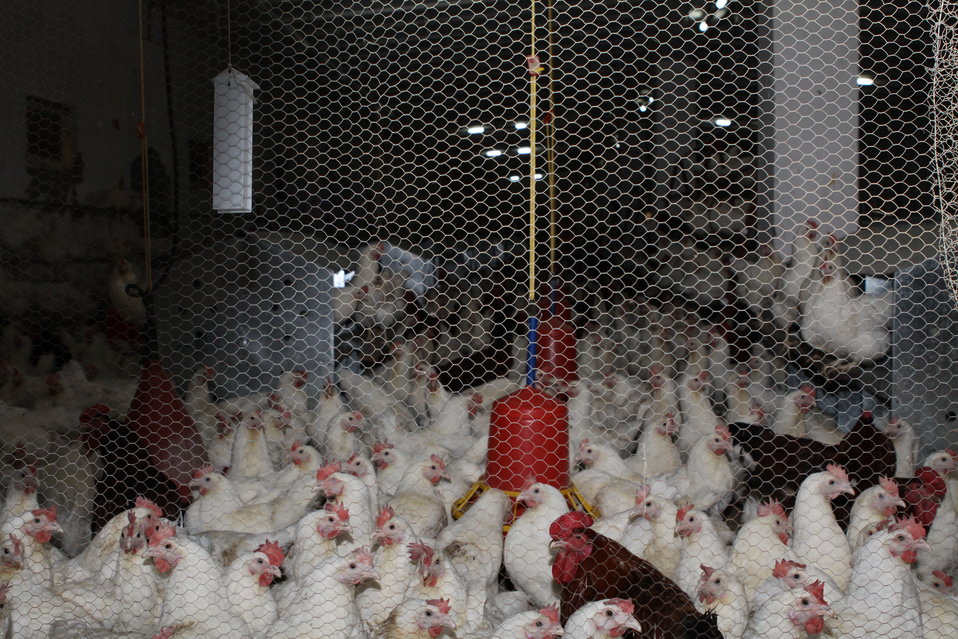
Bolan Poultry Farm